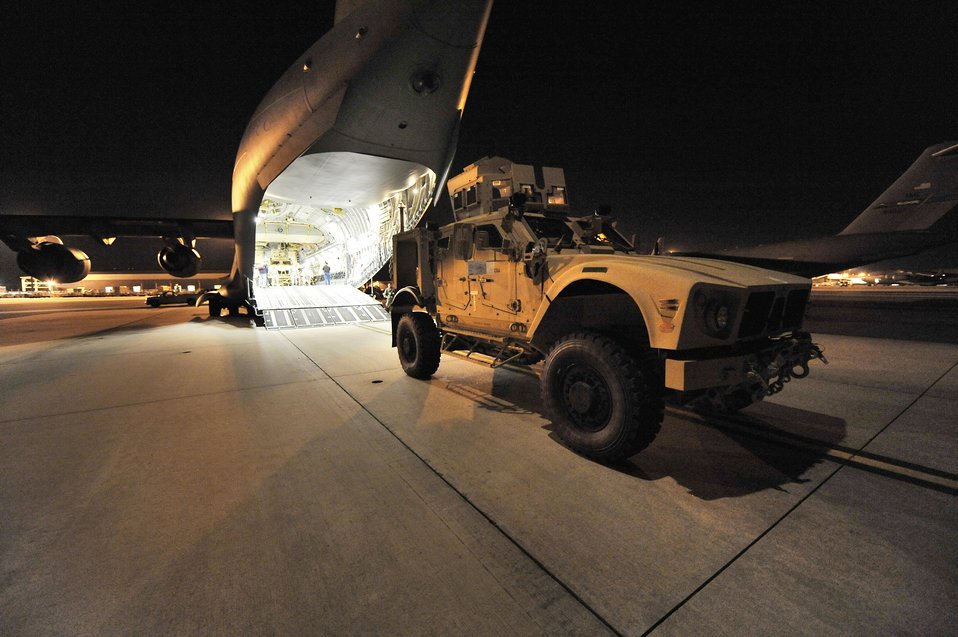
Special delivery

A mine-resistant, ambush-protected armored all-terrain vehicle is loaded onto a C-17 Globemaster III Sept. 30, 2009, at Charleston Air Force Base, S.C. Two M-ATVs were loaded and flown to Afghanistan to support combat missions. The C-17 is based out of McChord AFB, Wash.